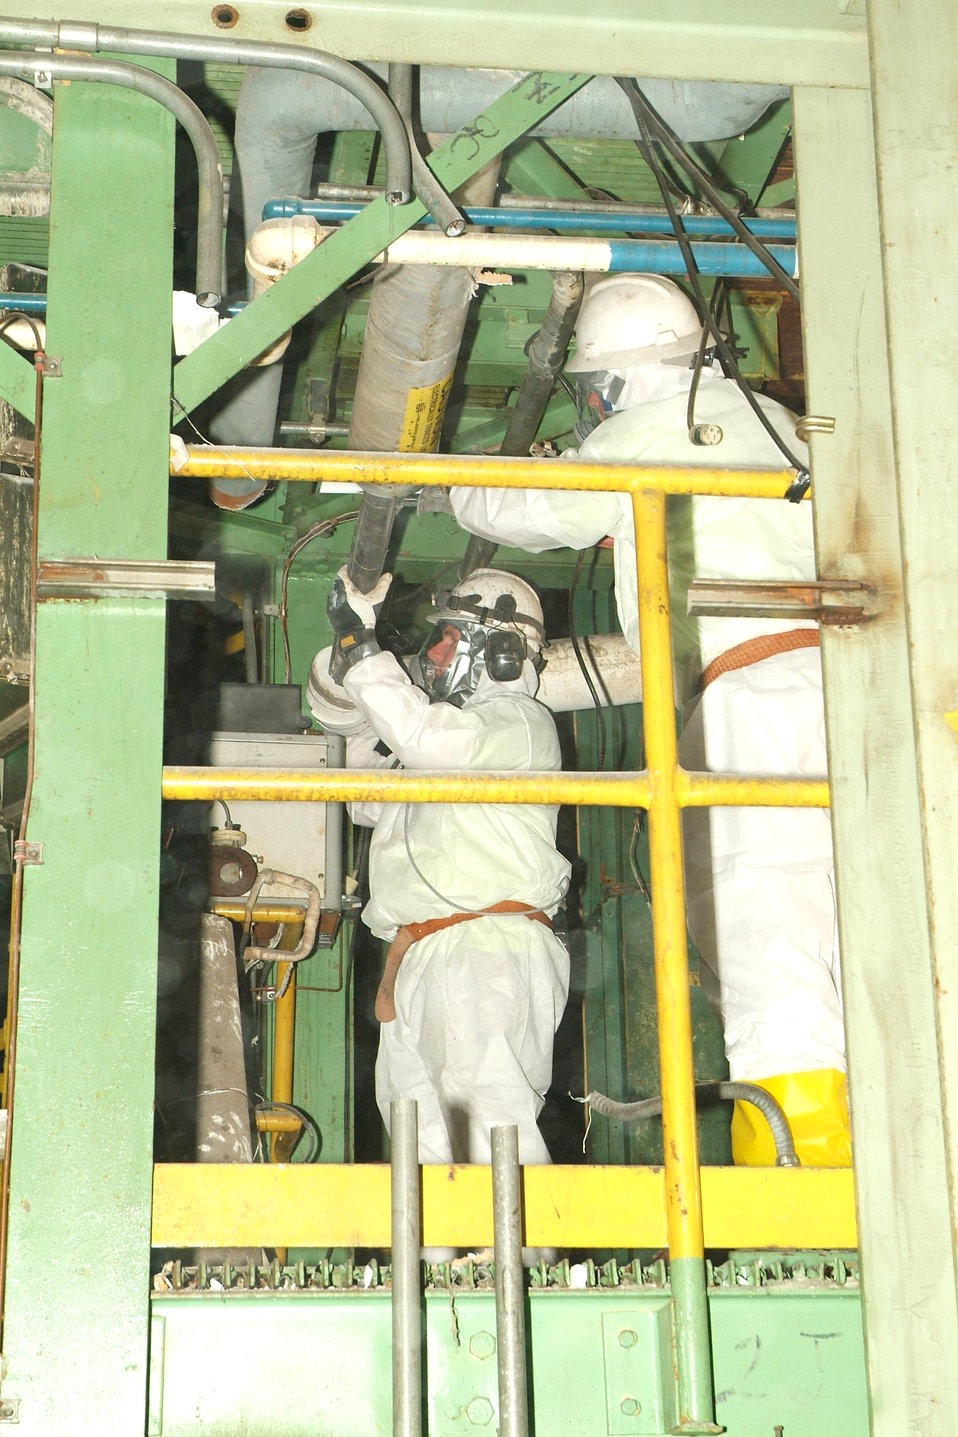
Equipment Removal

A Recovery Act crew removes process piping in the smelter, which was torn down in September 2010. Two other cleanup and demolition projects continued in 2011.